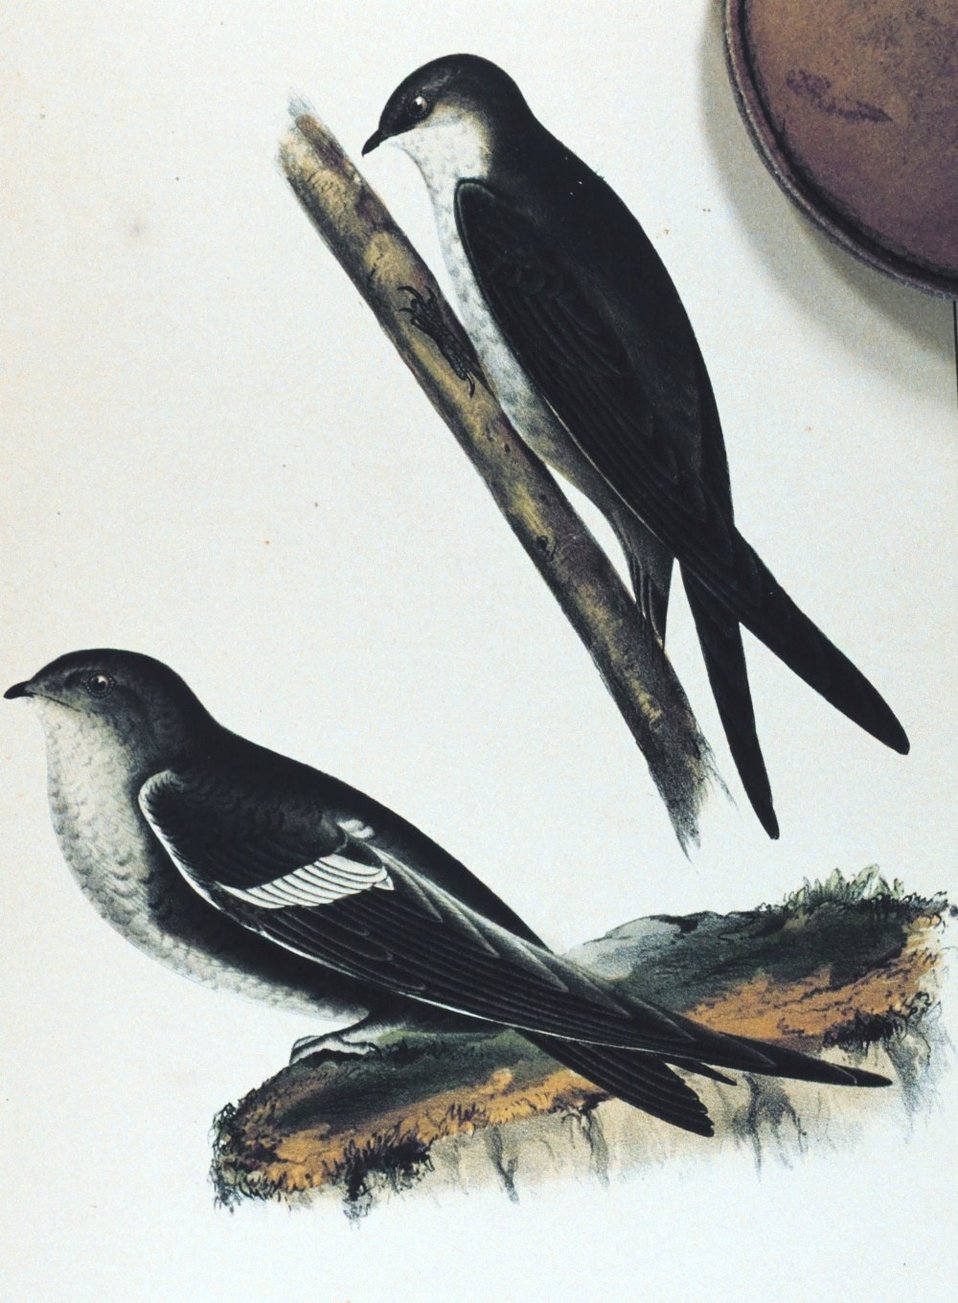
Panyptila melanoleuca. White-throated swift. This image was included in: Reports of Explorations and Surveys .... Volume X. 1859. Plate XVIII. P. 35 of U. S. Pacific Railroad Explorations and Surveys near the 35th Paralllel. Library Call Number F593 .U58 1855.